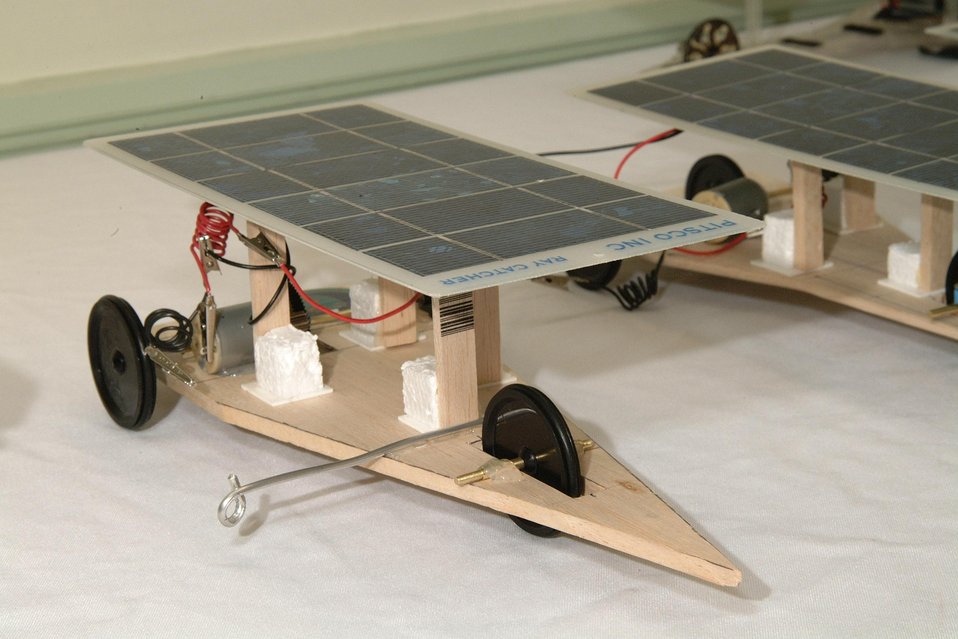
MODEL SOLAR CAR BUILT BY STUDENTS AS PART OF DOE'S NATIONAL MIDDLE SCHOOL SCIENCE BOWL.

THE DEPARTMENT OF ENERGY SPONSORED THE FIRST NATIONAL MIDDLE SCHOOL SCIENCE BOWL ON MARCH 21-24, 2002 IN WASHINGTON, DC AT DOE HEADQUARTERS FORRESTAL BUILDING. ON MARCH 23RD THE COMPETITION INCLUDED A MODEL SOLAR CAR RACE HELD AT THE NATIONAL 4-H CONFERENCE CENTER, CHEVY CHASE, MD. THE MODEL CARS WERE DESIGNED AND CONSTRUCTED BY THE TEAM MEMBERS.